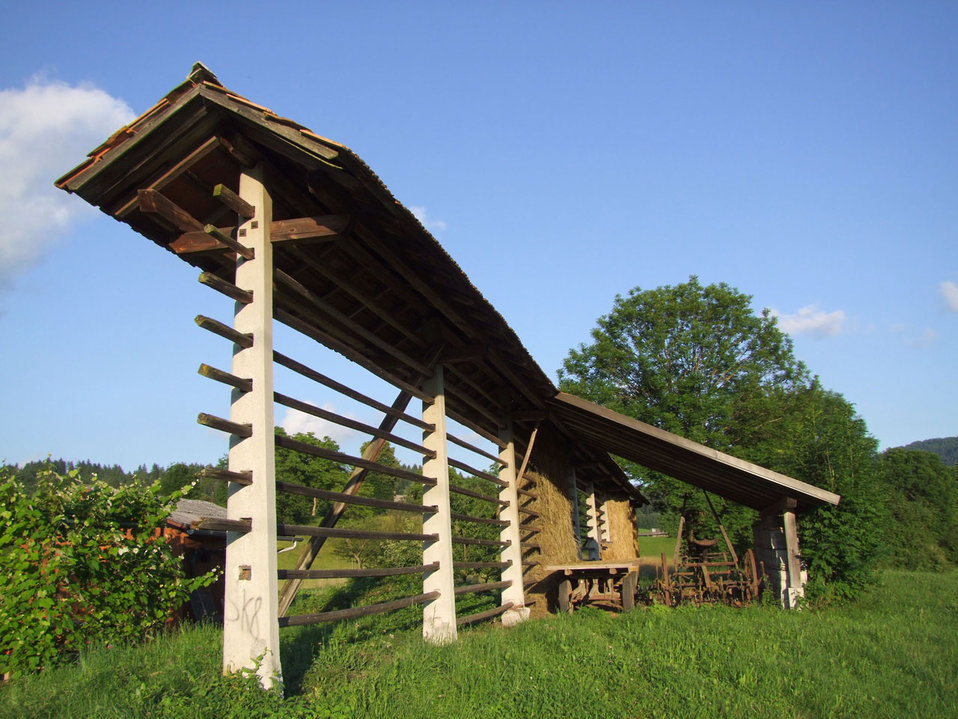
Kozolec

Living history. even when new times are here, 'kozolec' can be excellent place for storage in country with frequent short showers.